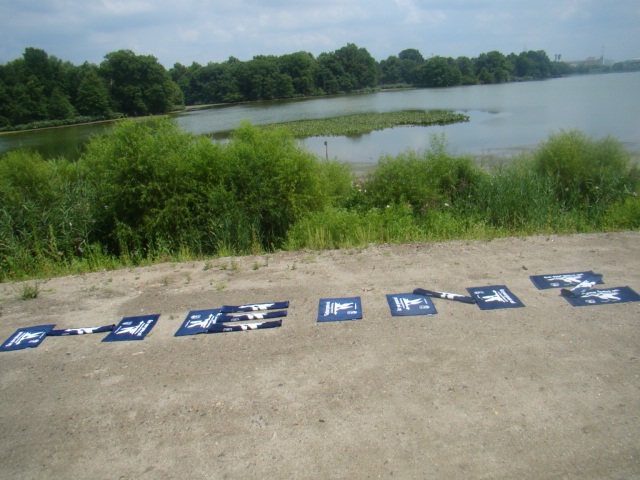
Get Your Goose On!

GYGO! at John Heinz NWR.